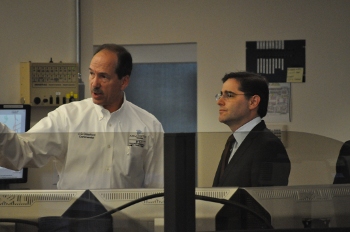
Next gen chairman explanation

Next Generation 9-1-1; Arlington, VA. November 23, 2010